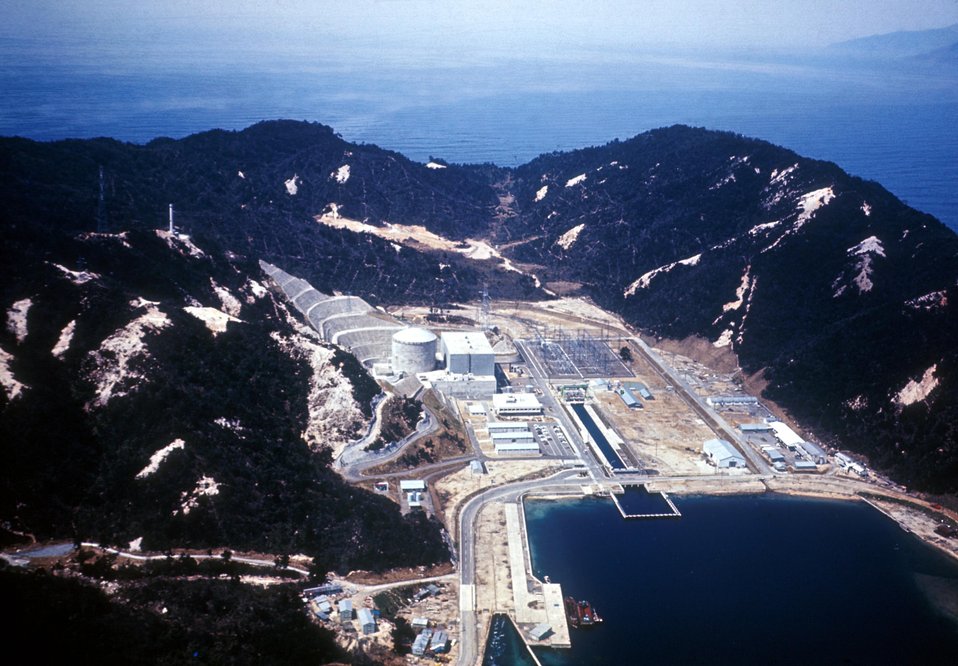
Japan - Tsuruga Plant - Japco Nuclear Reactor. c. 1970